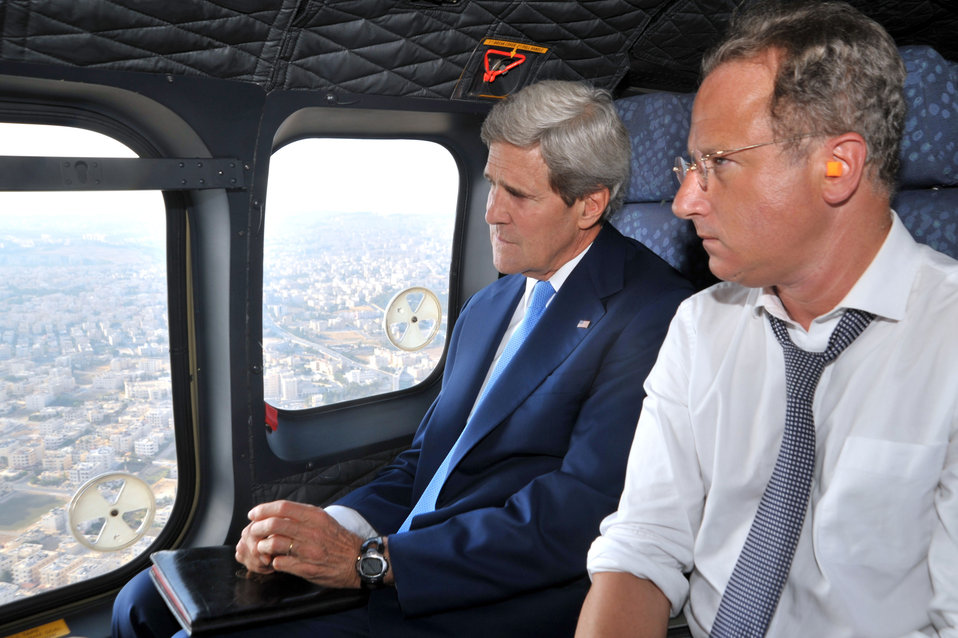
Secretary Kerry and Deputy Special Envoy Lowenstein Fly From Amman to Ramallah

U.S. Secretary of State John Kerry sits with Deputy Special Envoy for Middle East Peace Frank Lowenstein on a helicopter flight from Amman, Jordan, to Ramallah, West Bank, to meet with Palestinian Authority President Mahmoud Abbas on July 19, 2013.